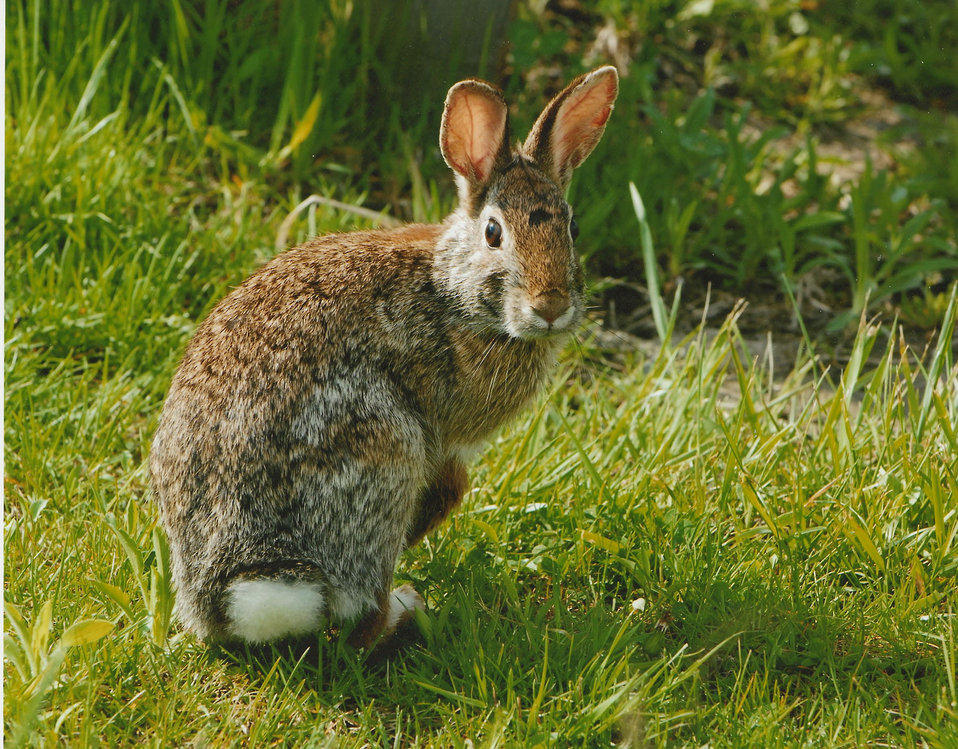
Eastern Cottontail at John Heinz National Wildlife Refuge in Philadelphia, Pennsylvania.